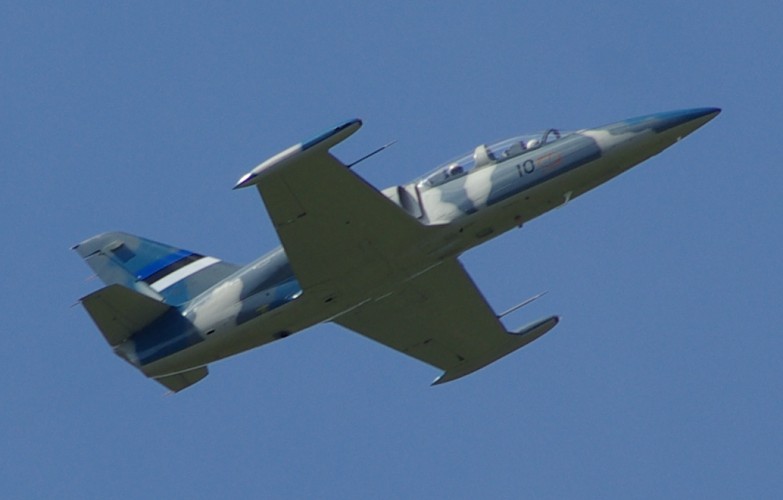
Photo taken by Madis Veskimeister, 23. june 2007 in Rapla (parade for Estonian Victory Day)